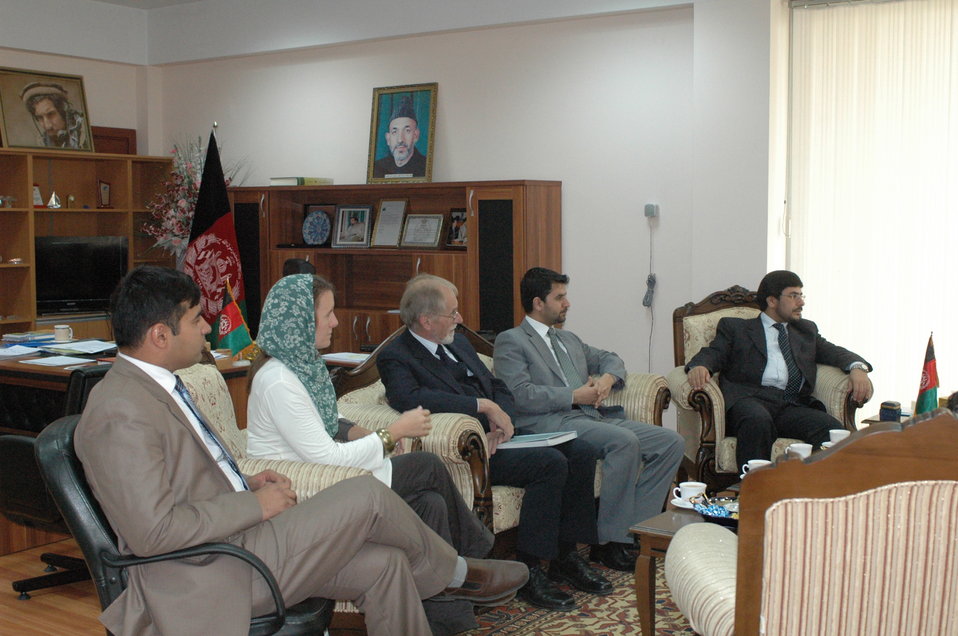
Community Based Stabilization Grants Ceremony, December 7, 2010